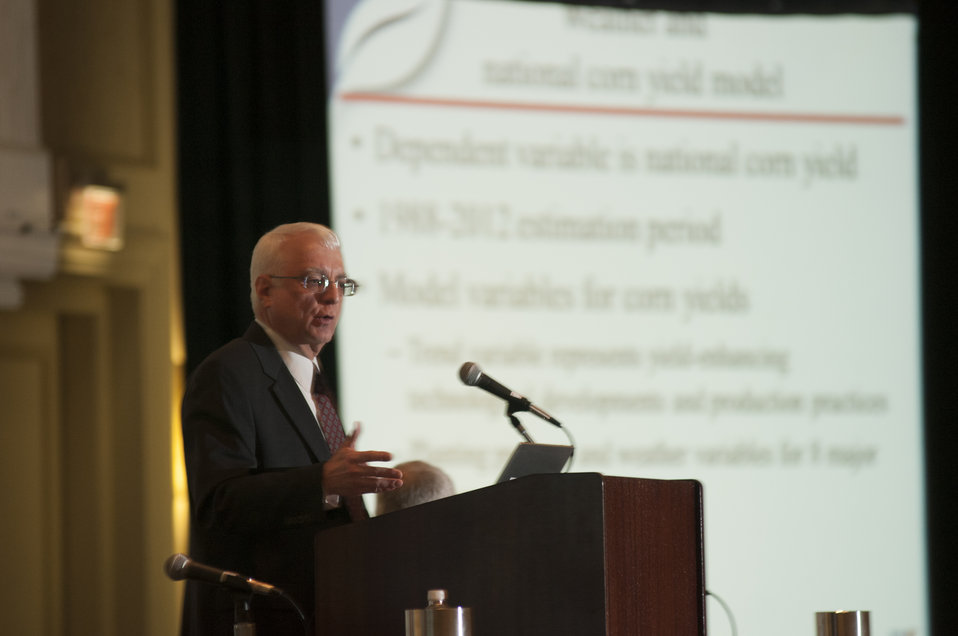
The U.S. Department of Agriculture (USDA) 2013 Agricultural Outlook Forum was held at the Crystal Gateway Marriott Hotel in Arlington, VA on Friday, Feb. 22, 2013. The breakout session on Grains and Oilseeds Outlook analyzed the metrological factors behind last summer’s historic drought, evaluated the effects of summer weather on corn and soybean yields, and provided the 2013 supply and demand outlook for wheat, corn, and soybeans.